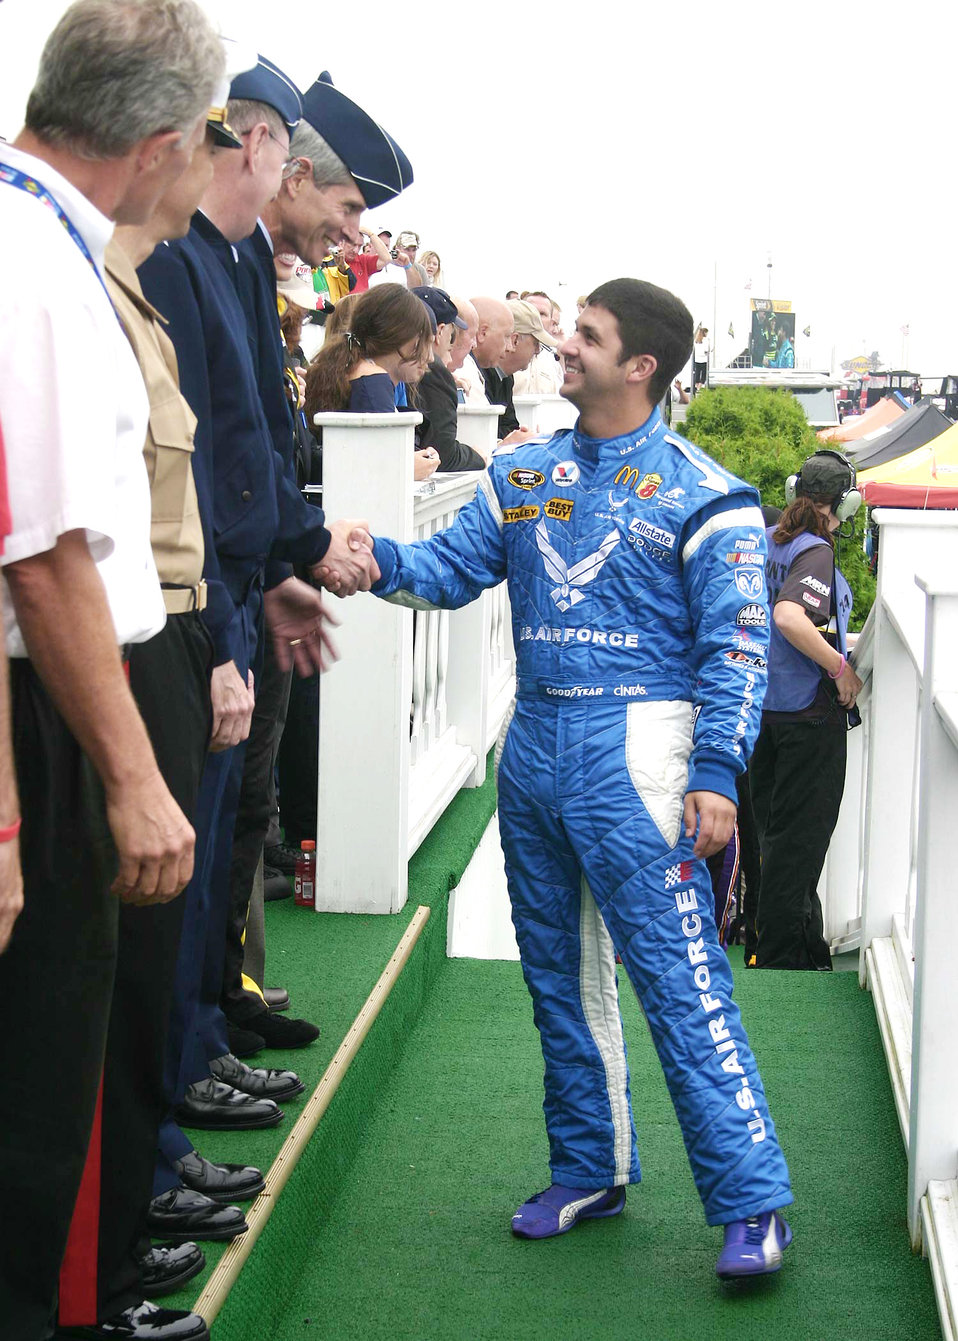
Pennsylvania 500 NASCAR weekend

Air Force Chief of Staff Gen. Norton Schwartz shakes hands with Reed Sorenson during the drivers introduction program at the Pennsylvania 500 NASCAR race Aug. 2. Mr. Sorenson drives the No. 43 car that for this race featured the U.S. Air Force paint scheme.